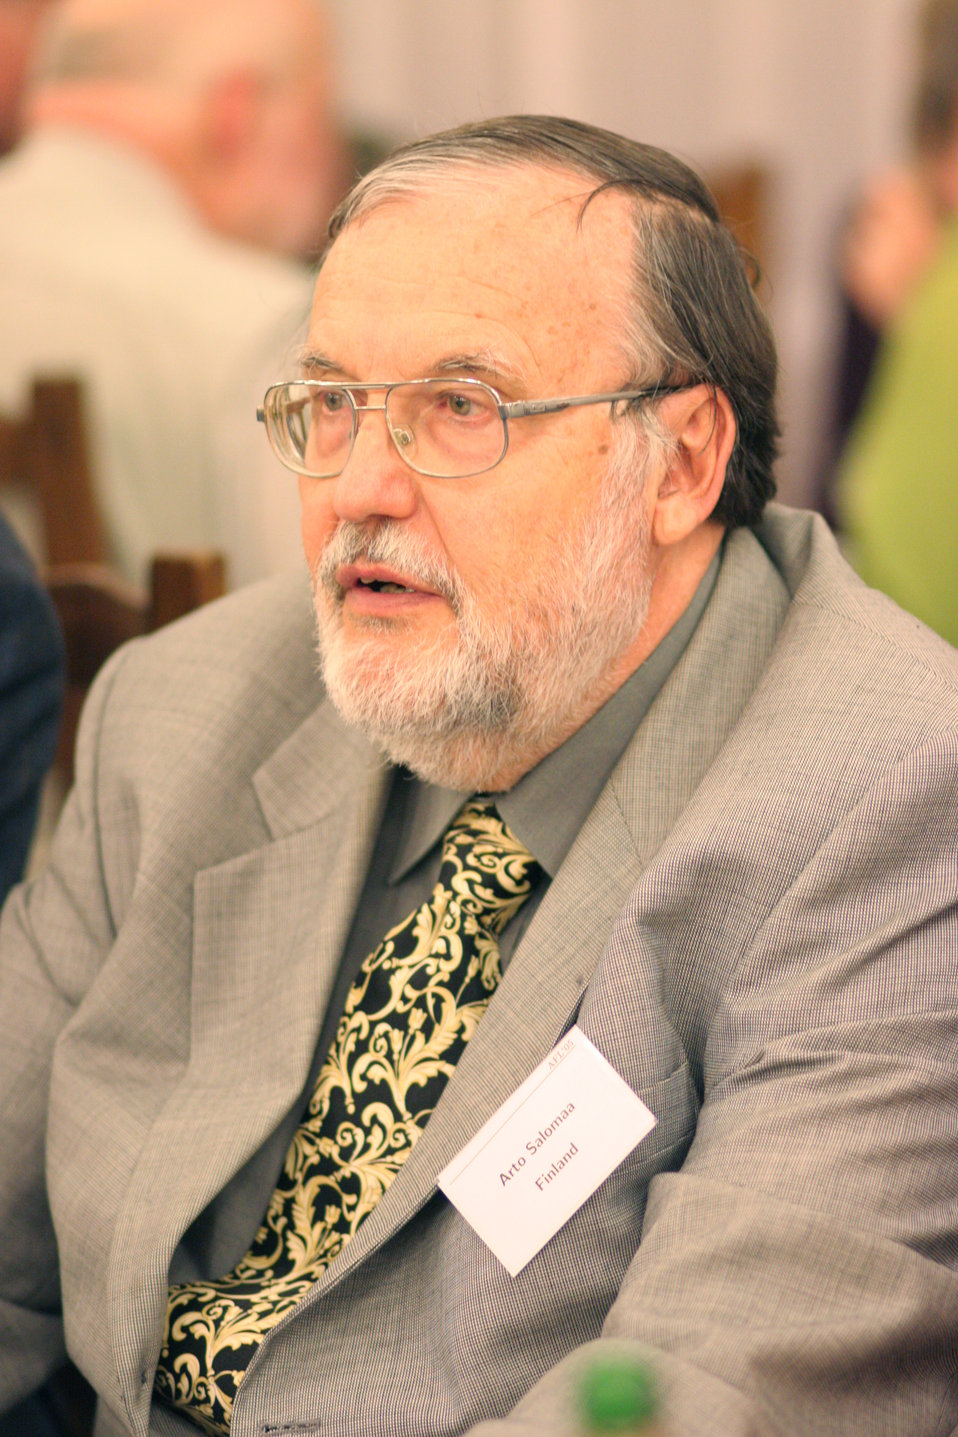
Portrait of Academician Arto Salomaa. Taken by Alexander Okhotin on 18 May 2005 in Dobogoko, Hungary, at the conference banquet of the AFL 2005 conference. Taken using a Canon 100mm f/2.0 lens mounted on 20D body, wide open, 1/125, ISO 1600, white balance digitally corrected.